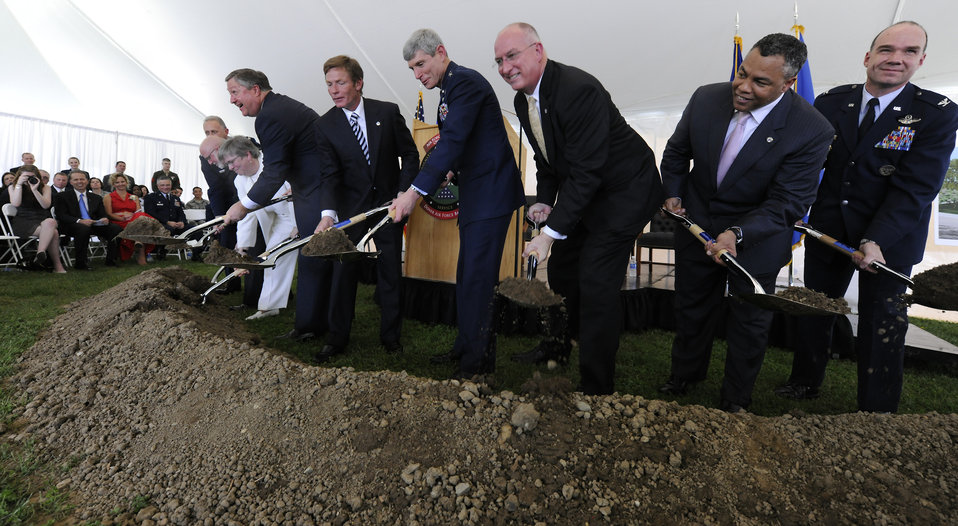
Fisher House Groundbreaking at Dover

Secretary of the Air Force Michael B. Donley, center-left, Kenneth Fisher, chairman of the board of trustees for the Fisher House Foundation, Gen. Norton Schwartz, Air Force Chief of Staff, center, and others, turn shovels filled with soil in a groundbreaking ceremony for a new Fisher House at Dover Air Force Base, Del. This Fisher House is the first to be built and dedicated to provide hospice services to family members of fallen servicemembers.